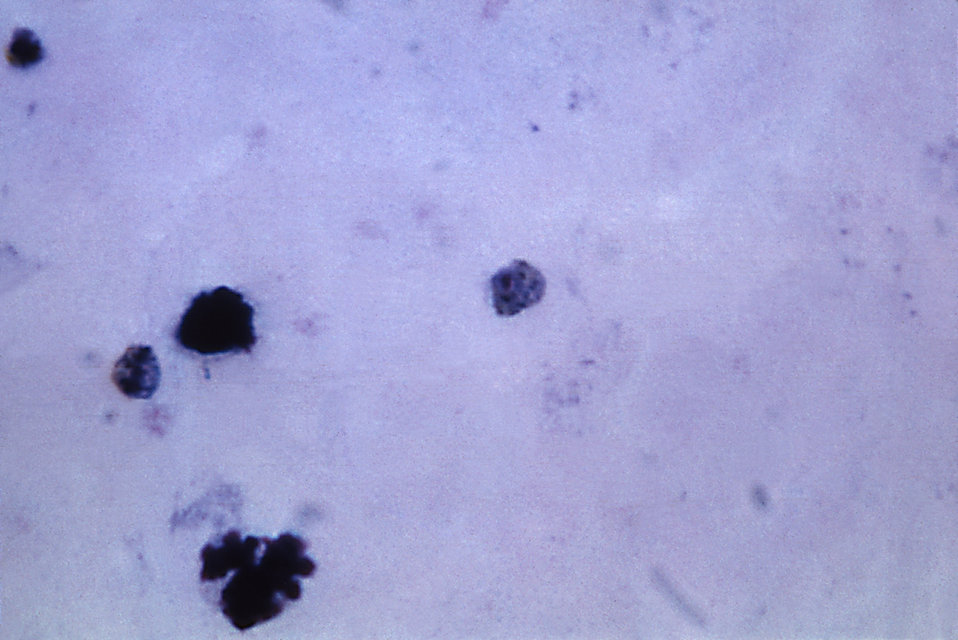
This thick film micrograph depicts a mature Plasmodium malariae trophozoite with prominent pigmentation.